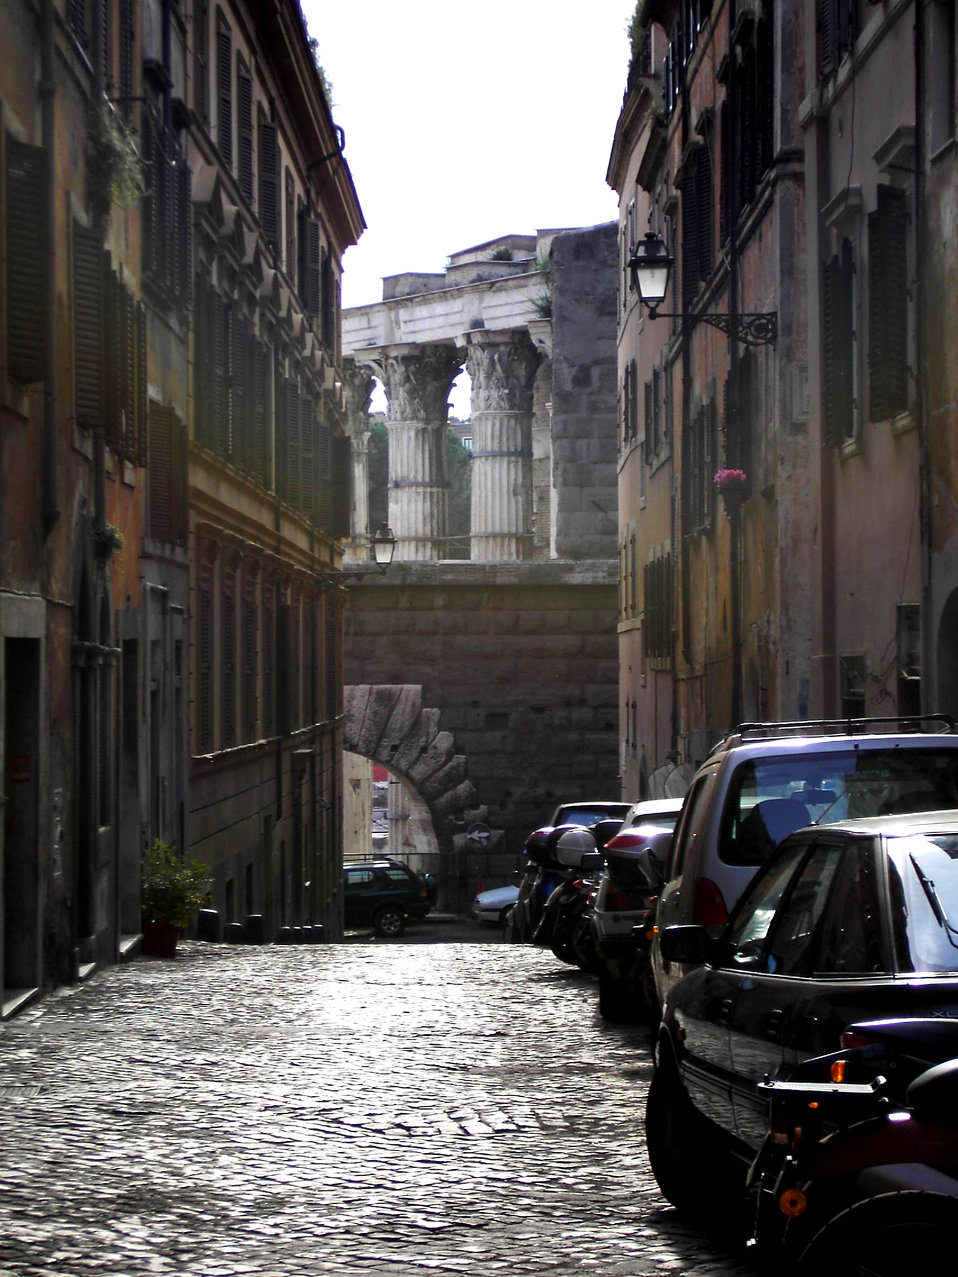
050425-001ViaBaccinaMuroDellaSuburra